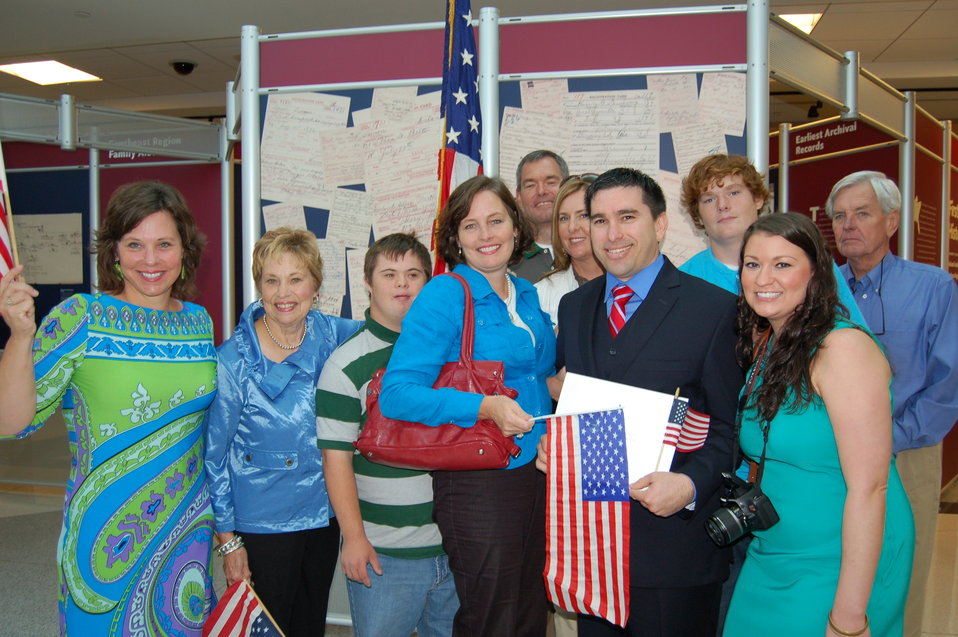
New Citizens